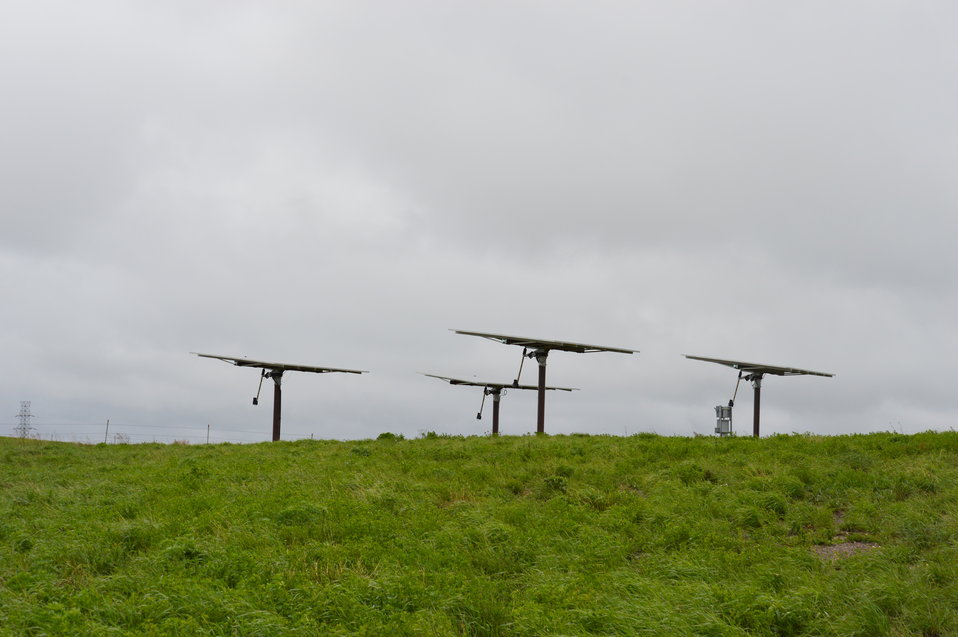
Solar panels

Green energy utilized at Audubon NWR.